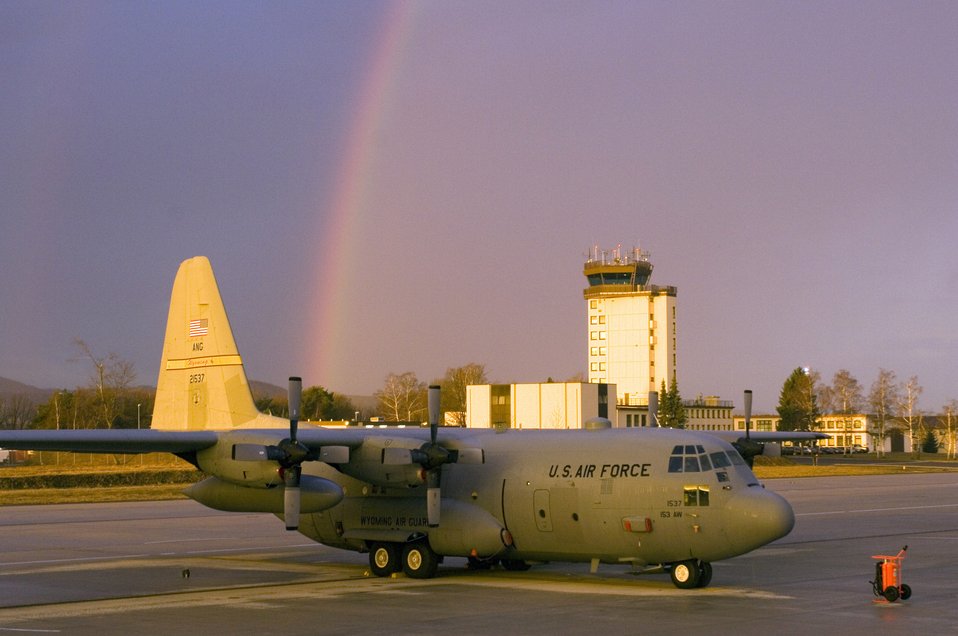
Herc operations

A rainbow appears over a C-130 Hercules and the air traffic control tower at Ramstein Air Base, Germany, on Monday, March 27, 2006. The air transport aircraft belongs to the 187th Airlift Squadron of the Wyoming Air National Guard in Cheyenne.